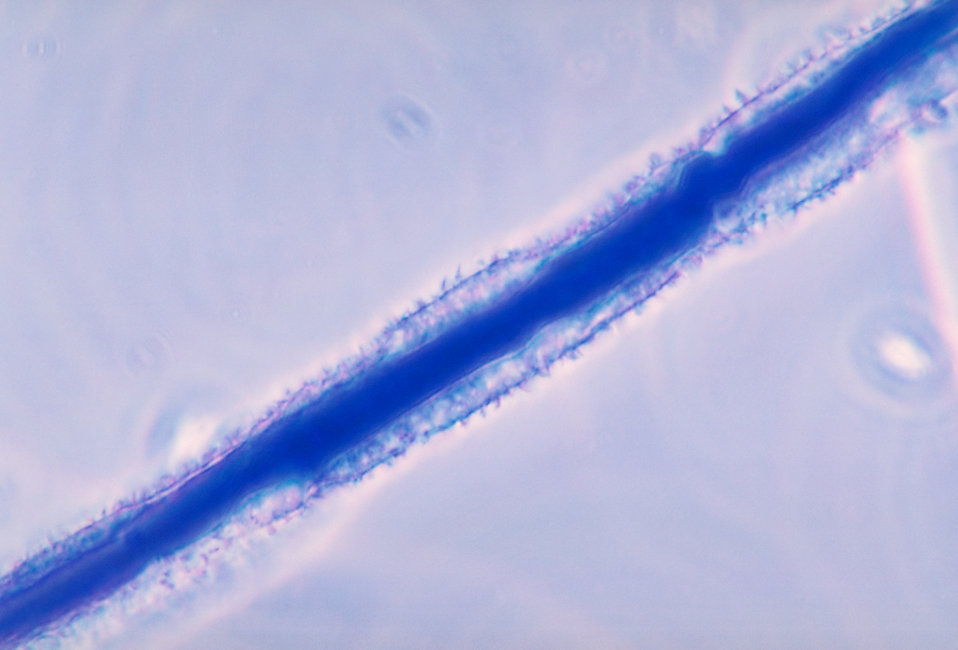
This photomicrograph depicts the appearance of a 'rough' conidiophore of the fungus Aspergillus flavus.